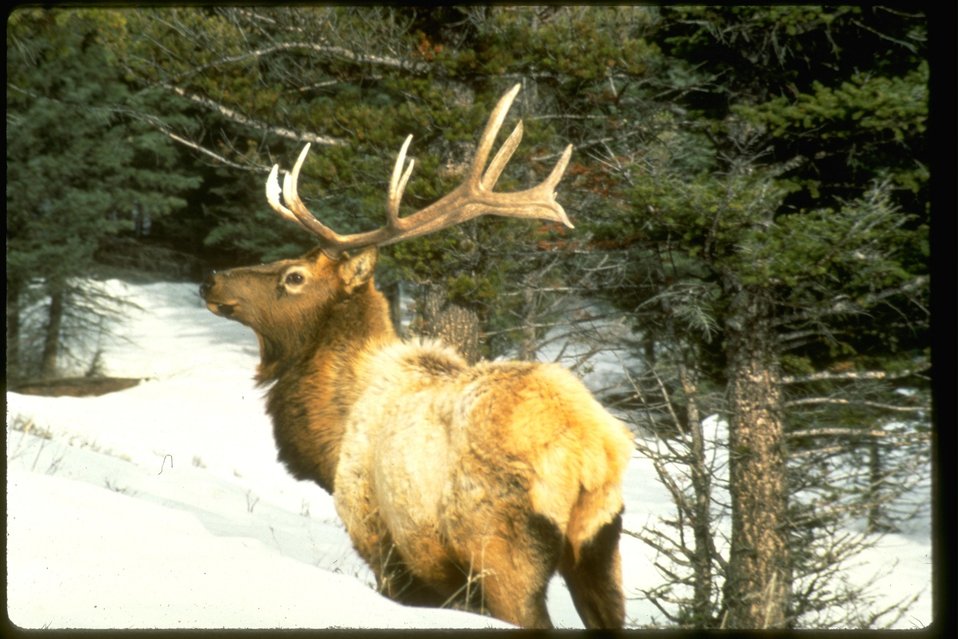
Bull Elk standing in the snow.